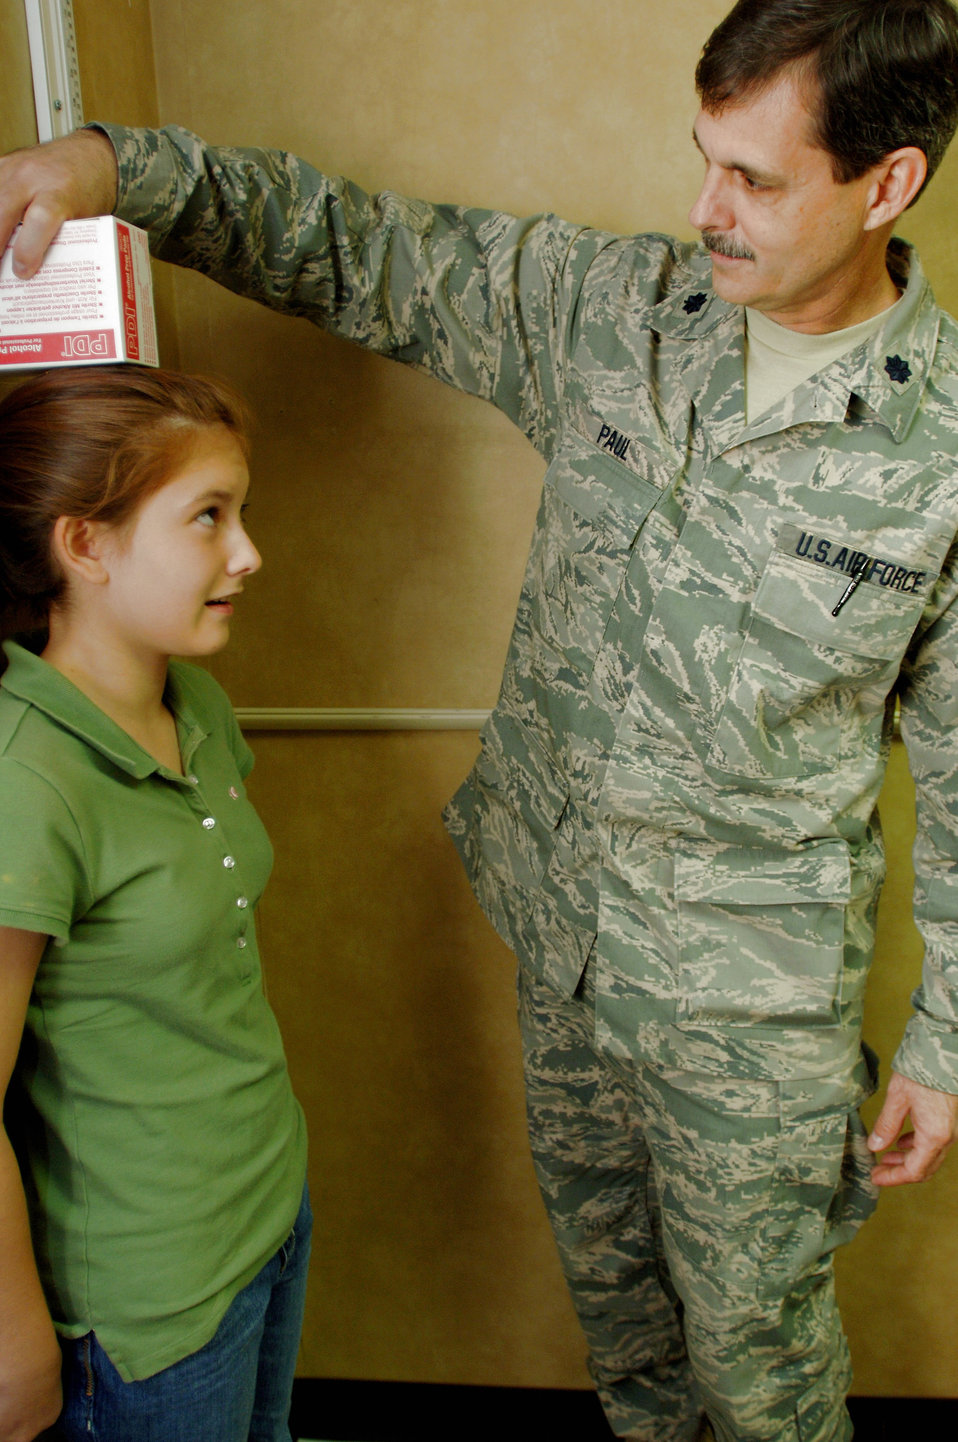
Air Force doctor's persistence leads to diagnosis of rare disease

Lt. Col. (Dr.) David Paul, chief of Pediatric Endocrinology, measures the height of Rachel Post, daughter of retired Lt. Col. Todd Post, at the Wilford Hall Medical Center Pediatric Endocrinology Clinic on Lackland Air Force Base, Texas, Nov. 3. Doctor Paul's persistence and dedication helped diagnose a young woman's rare disease.